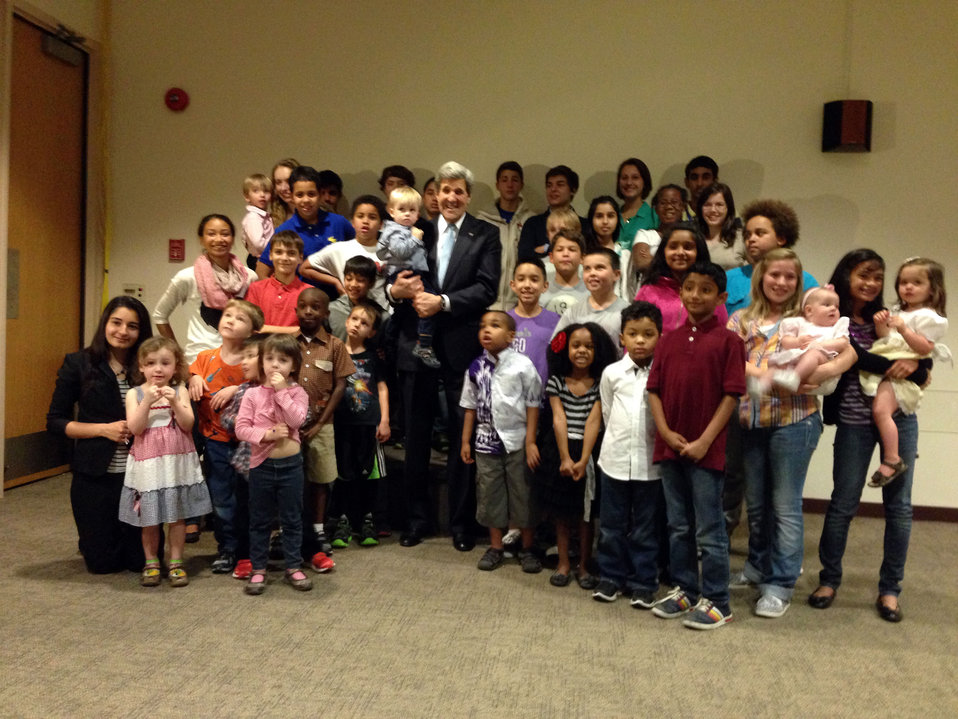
Secretary Kerry With the Children of Embassy Riyadh Staff

At the Embassy Meet and Greet, U.S. Secretary of State John Kerry poses for a photo with the children of the staff at the U.S. Embassy in Riyadh, Saudi Arabia, on March 4, 2013.